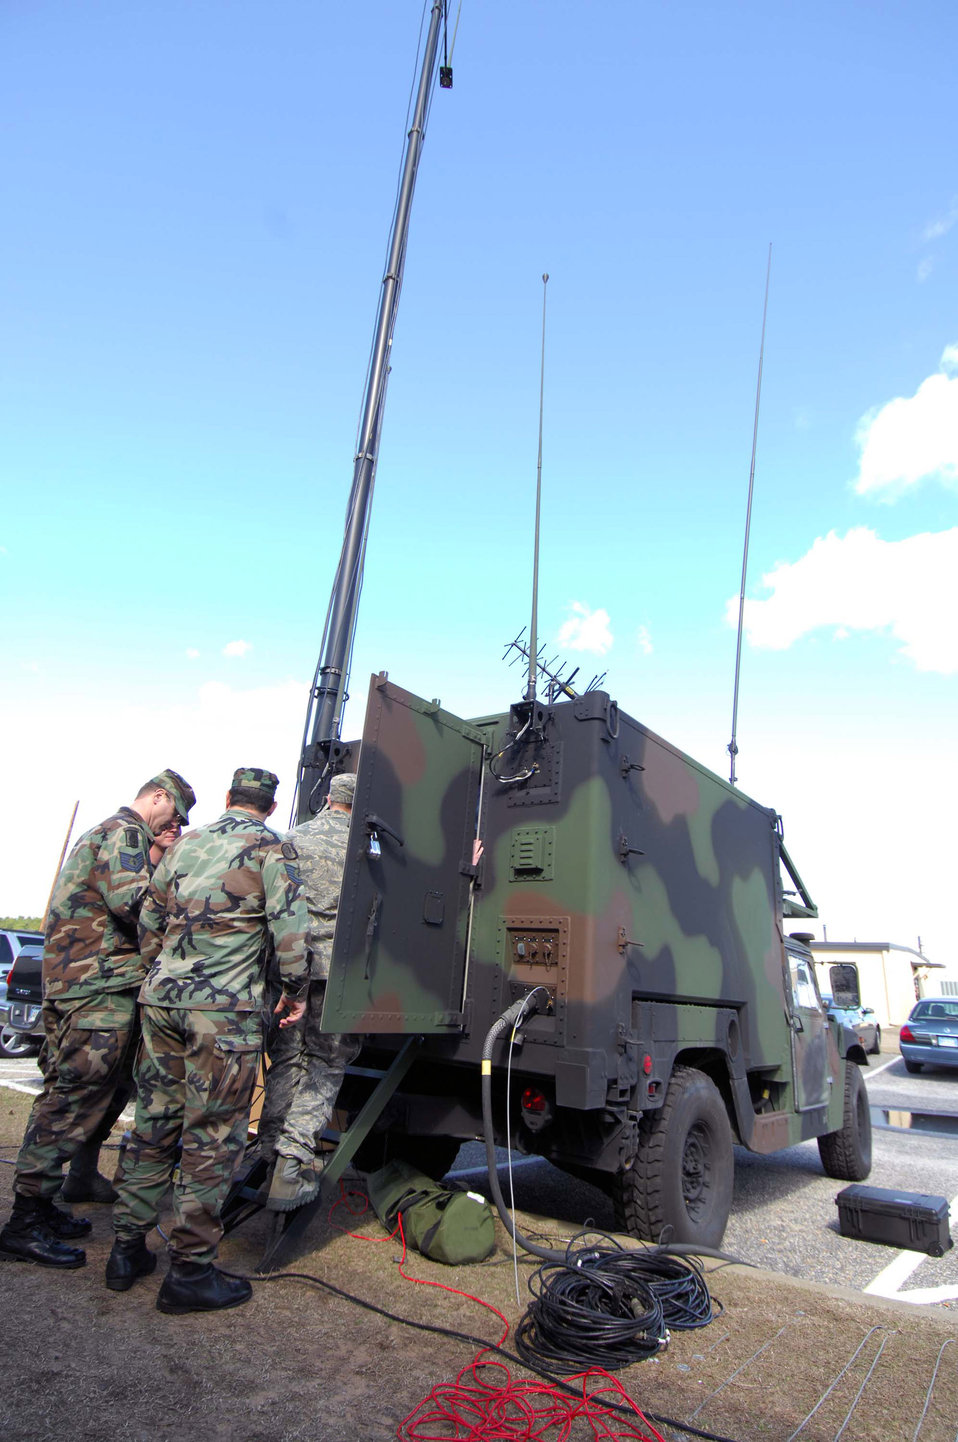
Air Force JTACs train on leading edge technology

Joint terminal attack controllers from around the Air Force take turns viewing the communications systems inside the Air Support Operations Center Gateway vehicle Feb. 27 at Shaw Air Force Base, S.C. The JTACs attended a one week training course on the new ASOC Gateway vehicle.